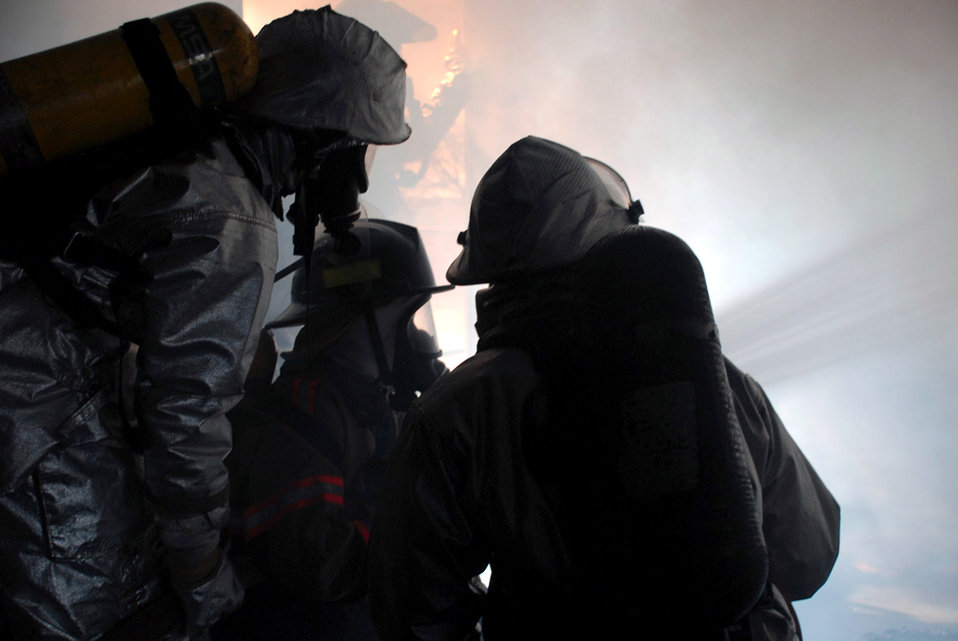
Firefighters exchange knowledge, experience

Honduran firefighters extinguish a blaze in the Joint Task Force-Bravo